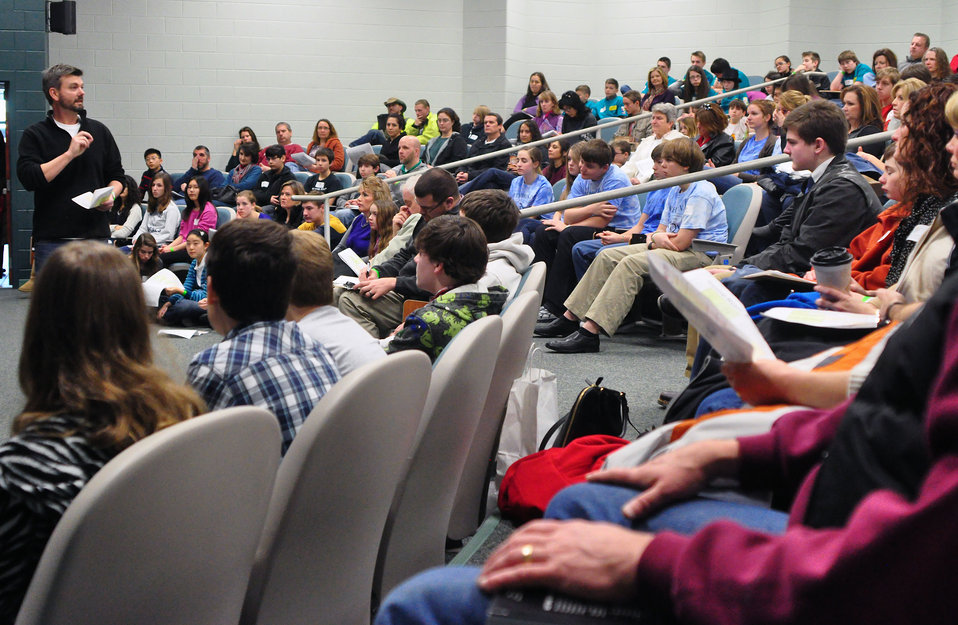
DOE Middle School Science Bowl

14-017 DOE photo Lynn Freeny 2-1-2014 Oak Ridge Tennessee